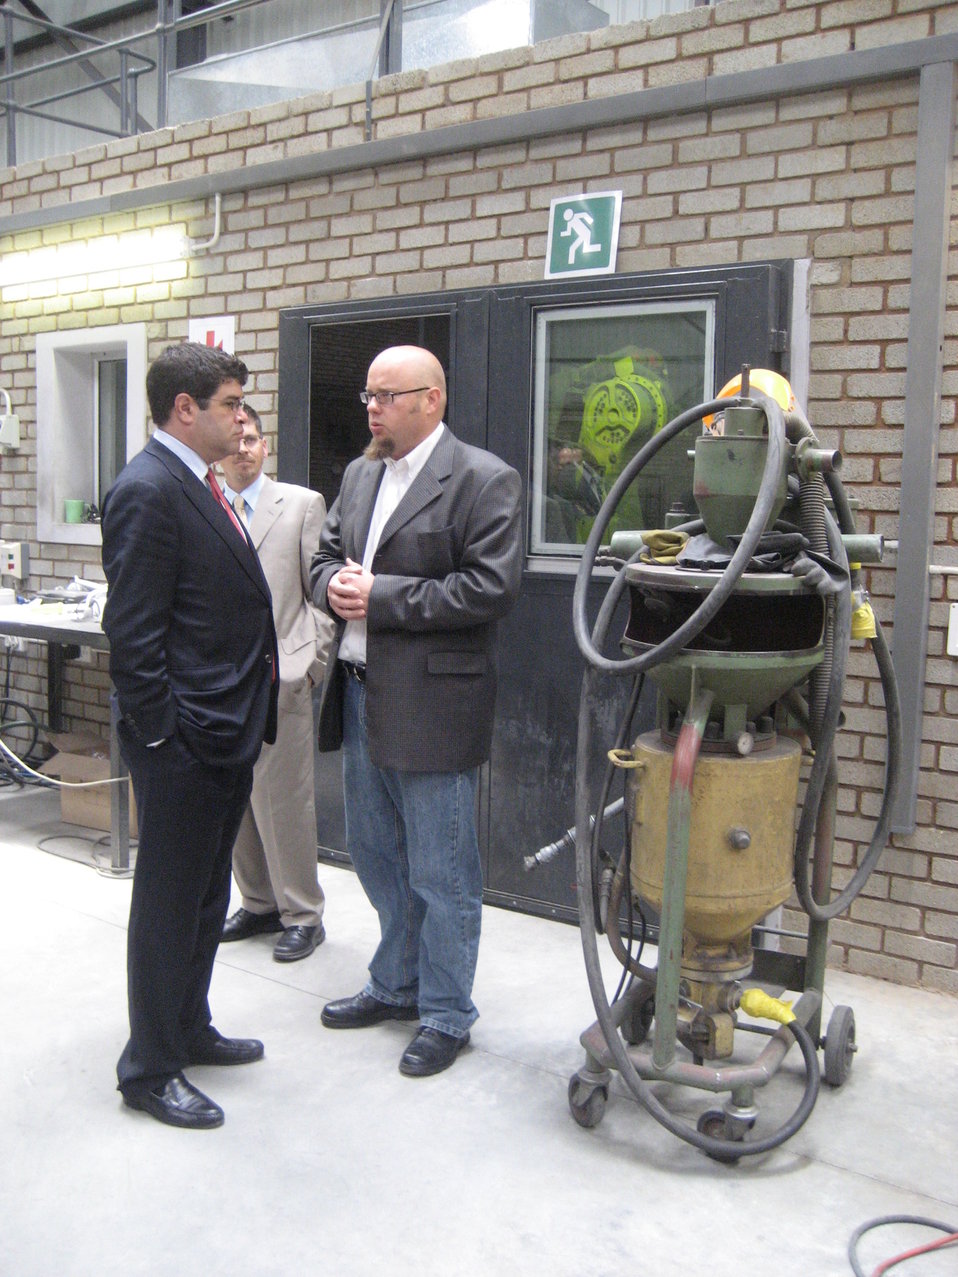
Deputy Secretary Neal Wolin’s trip to Africa 2009

Deputy Secretary Wolin tours Thermaspray, a South African small business located outside Johannesburg, to discuss the importance of access to credit for small and medium enterprises and ways to expand financial access.